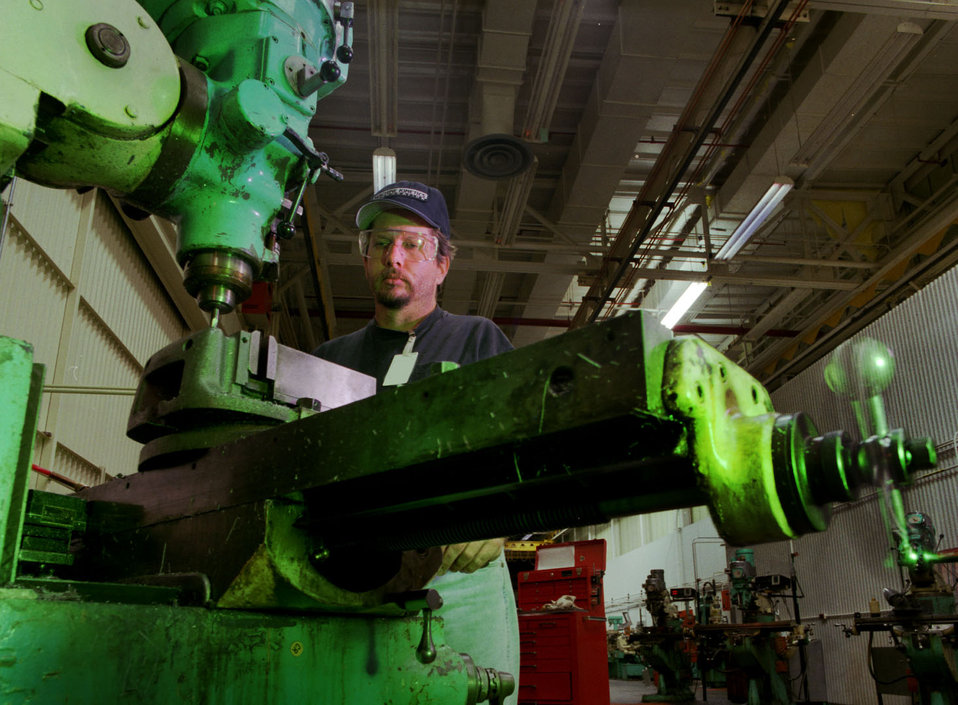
ETTP Reindustrialization Oak Ridge

98-173-7 DOE photo by Lynn Freeny

ETTP Reindustrialization Oak Ridge Tennessee 5-19-1998